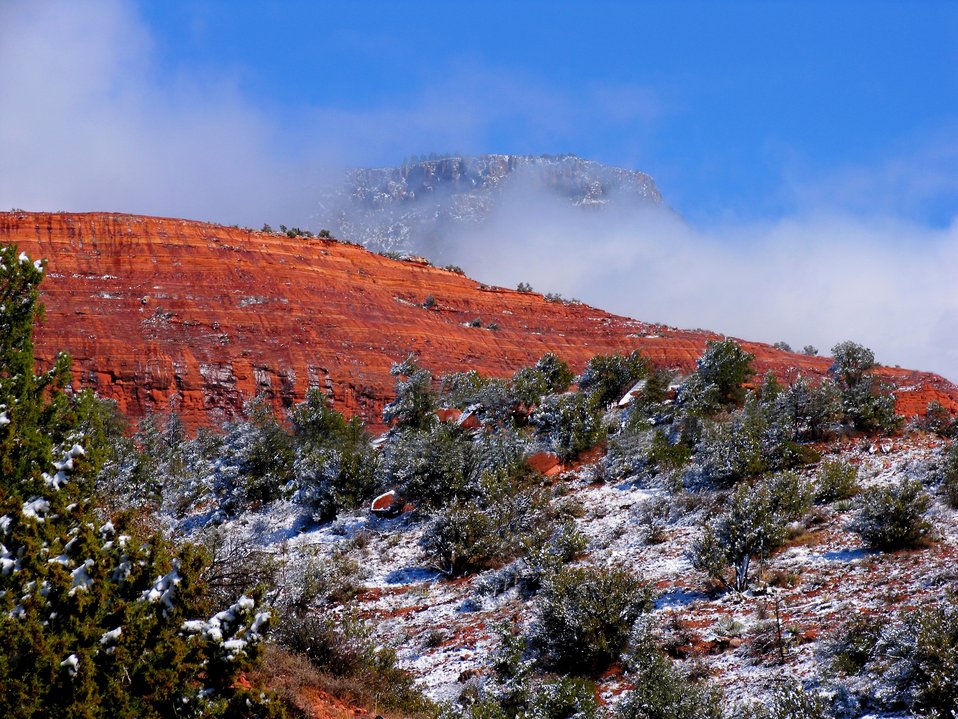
Red sandstone and white snow dusting pinion pines with a high mountain looming over all through low-lying clouds.